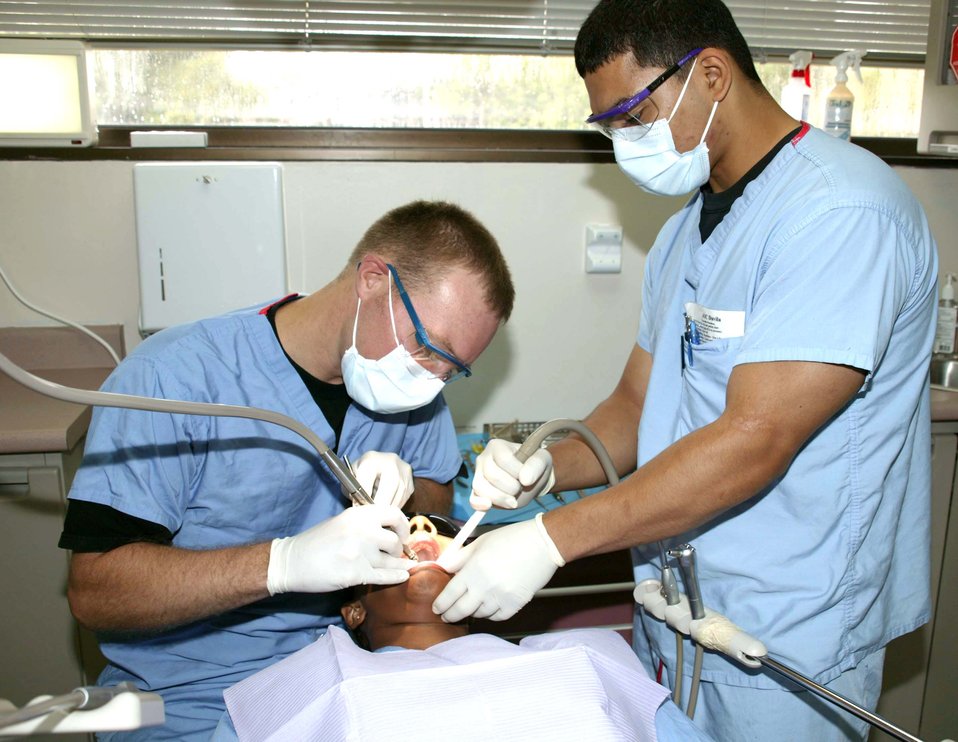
Fix 'em up, send 'em out

SHAW AIR FORCE BASE, S.C. -- Capt. (Dr.) Rory Frederick (left) and Airman 1st Class Joseph Davila provide dental care to a patient here. They are assigned to the 20th Aeromedical-Dental Squadron.